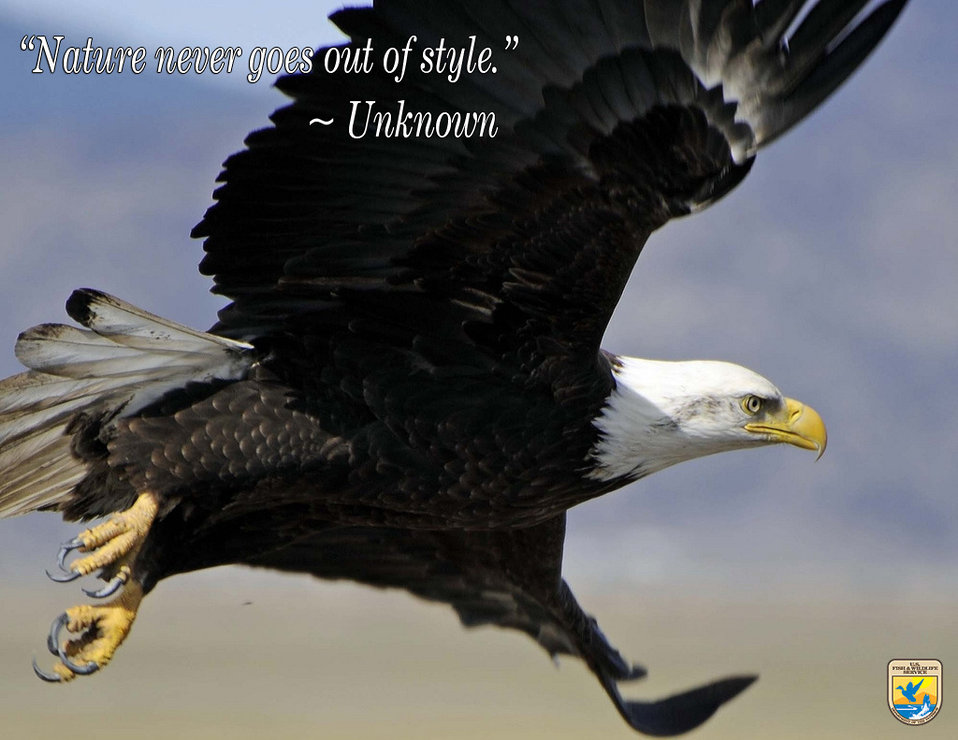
Get Inspired!

Although this quote is from an unknown source, it still resonates with wildlife lovers. Feel free to download, share and enjoy!